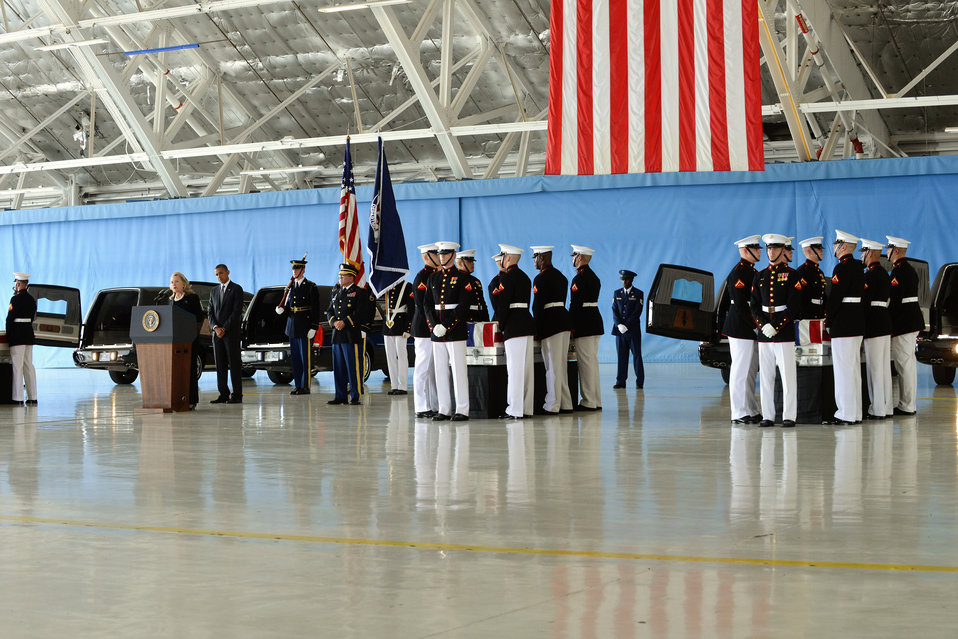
President Obama and Secretary Clinton at the Transfer of Remains Ceremony to Honor Those Lost in Attacks in Libya

President Barack Obama and U.S. Secretary of State Hillary Clinton honor the Benghazi victims at the Transfer of Remains Ceremony held at Andrews Air Force Base, Joint Base Andrews, Maryland, September 14, 2012. An attack on the U.S. diplomatic mission in Benghazi, Libya claimed the lives of Ambassador J. Christopher Stevens, Information Management Officer Sean Smith, and security personnel Tyrone S. Woods and Glen A. Doherty on September 11, 2012.